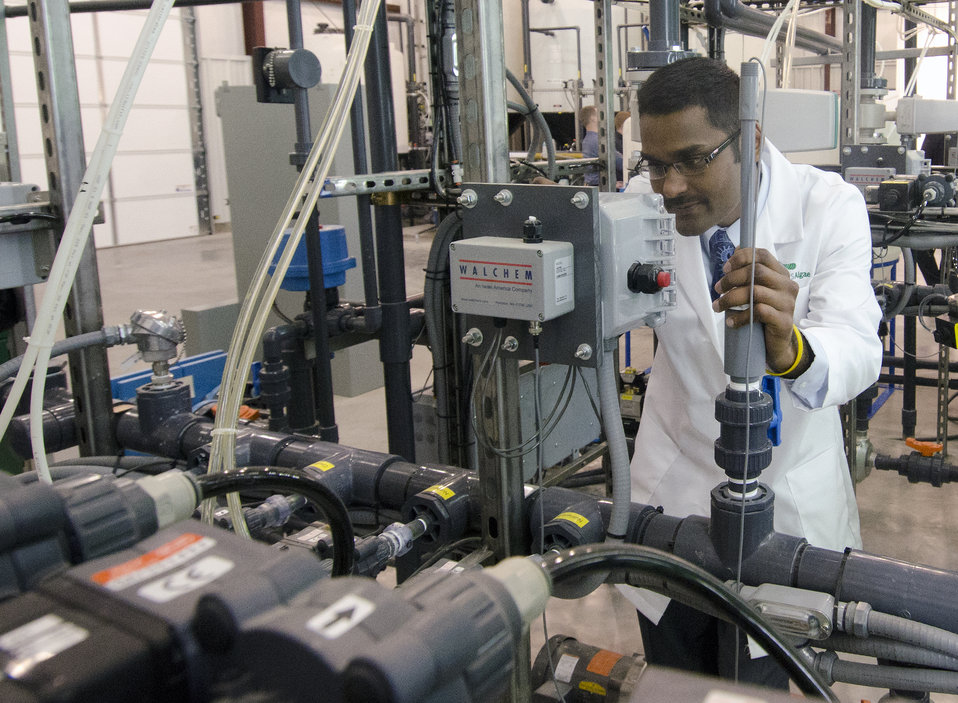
BioProcess Algae Field Engineer Thiruvenkadam Viswanathan at the BioProcess Algae facility of the Green Plains Renewable Energy (GPRE), Inc. (GPRE) is checking to ensure that the cultures are within pH tolerances during processing. This operation is co-located within GPRE’s ethanol factory where BioProcess Algae technology is used to treat waste products, carbon dioxide, recycled heat and water to mass-produce algae. Algae from this facility are used for animal feeds; pharmaceutical and beauty products. Agriculture Secretary Tom Vilsack toured the facility on Friday, Apr. 15, 2011.